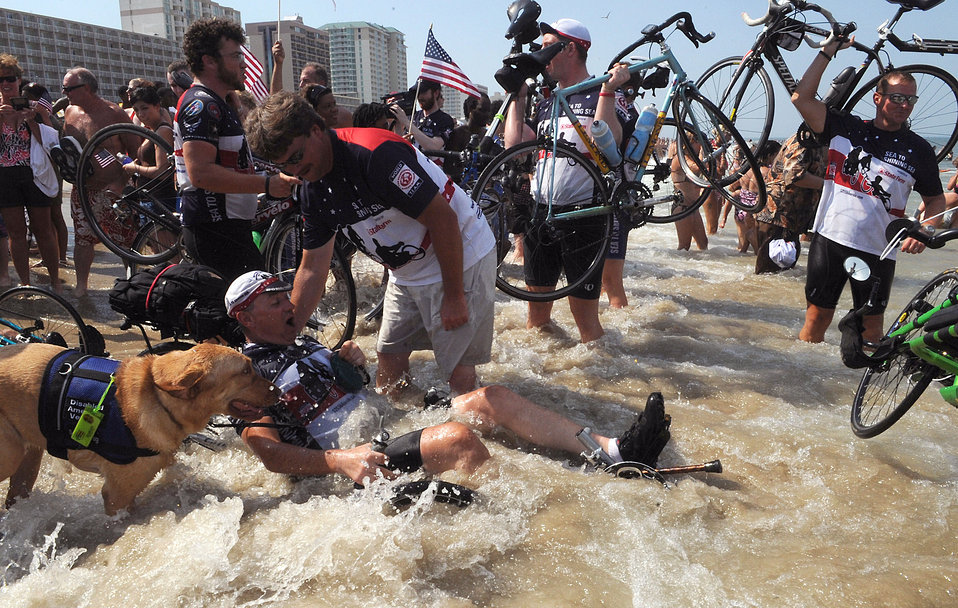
Sea to Shining Sea

Riders celebrate in the Atlantic Ocean during the closing ceremony of Sea to Shining Sea July 24, 2010, in Virginia Beach, Va. Sea to Shining Sea is a 4,000-mile bike ride that started at the Golden Gate Bridge in San Francisco, and ended in Virginia Beach.